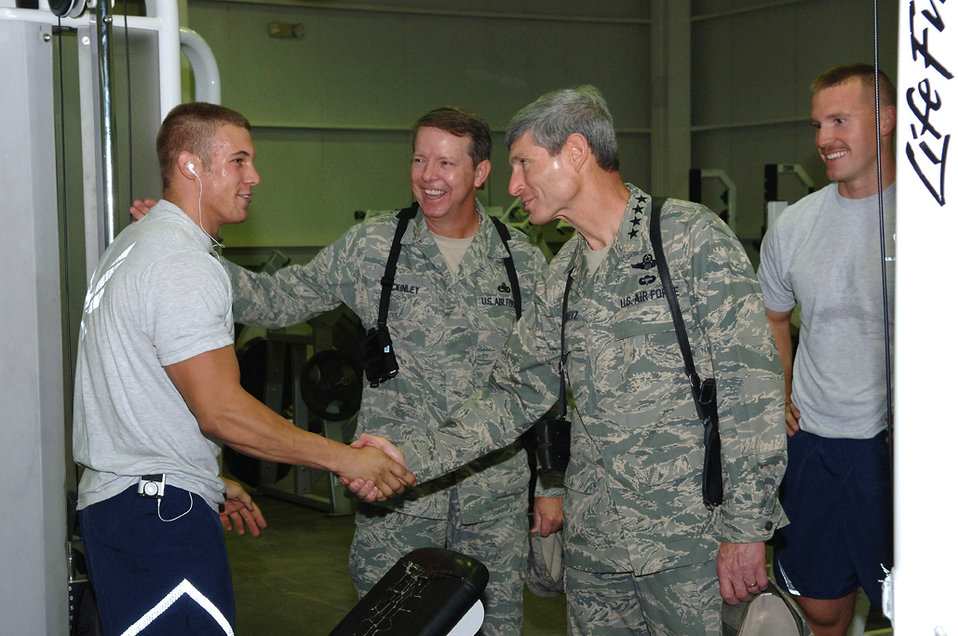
Chief of staff wraps up Middle East tour at Joint Base Balad

Air Force Chief of Staff Gen. Norton Schwartz and Chief Master Sgt. of the Air Force Rodney McKinley congratulate an Airman for his dedication to fitness during a tour of the Red Tail Fitness Center at Joint Base Balad, Iraq, Oct. 25. General Schwartz and Chief McKinley visited eight installations throughout the U.S. Central Command area of responsibility and the Horn of Africa.